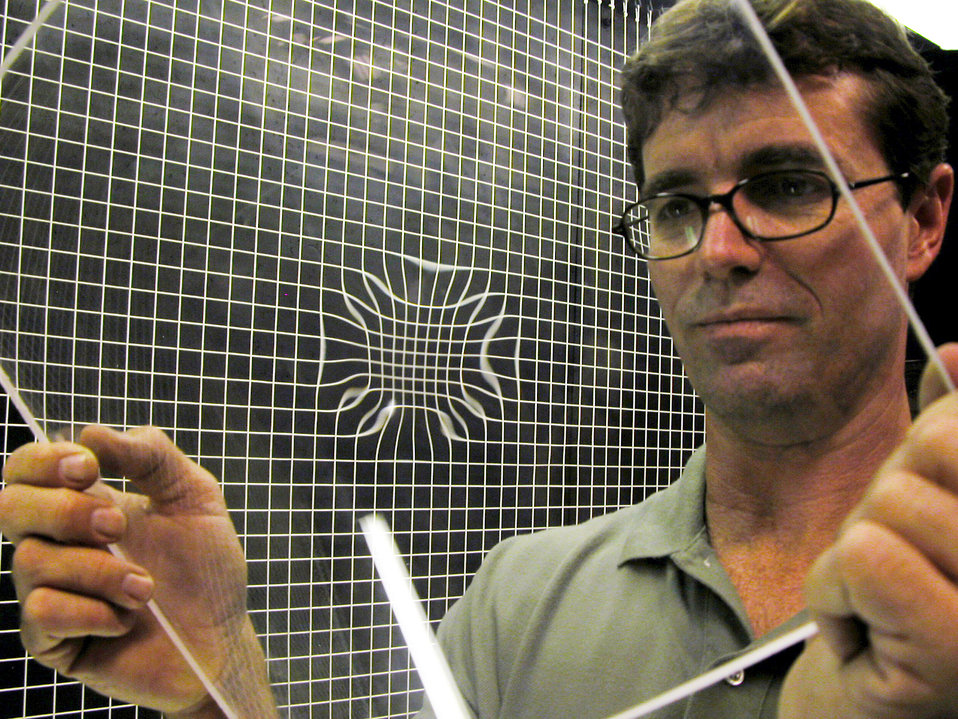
Distortion

ROBINS AIR FORCE BASE, Ga. -- Peter Wellman holds a piece of F-15 canopy in front of a grid board that shows a distortion from an improper field repair. Imperfections like these have to be fixed to give pilots an unobstructed view.